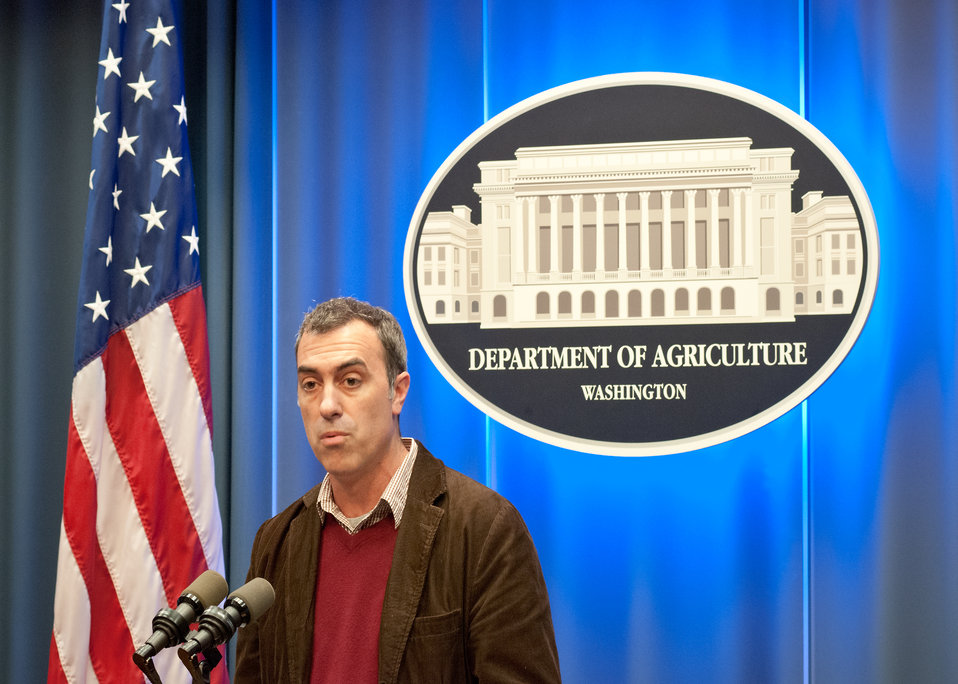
Phil Petrilli, Regional Director, Chipotle Mexican Grill, a sponsor of the On-Farm Food Safety Project discussed the Chipotle Food with Integrity Program, level of local food purchasing of his company and the need for farmers to adopt best practices in food safety. Petrilli along with Agriculture Deputy Secretary Dr. Kathleen Merrigan and leaders from agriculture and food organizations announced the release of the On-Farm Food Safety Project Tool, www.onfarmfoodsafety.org at the United States Department of Agriculture in Washington, D.C., on Thursday, December 15, 2011. The On-Farm Food Safety Project is the first of its kind and was developed by a broad coalition of farm and produce industry partners with lead funding from the USDA Risk Management Agency.